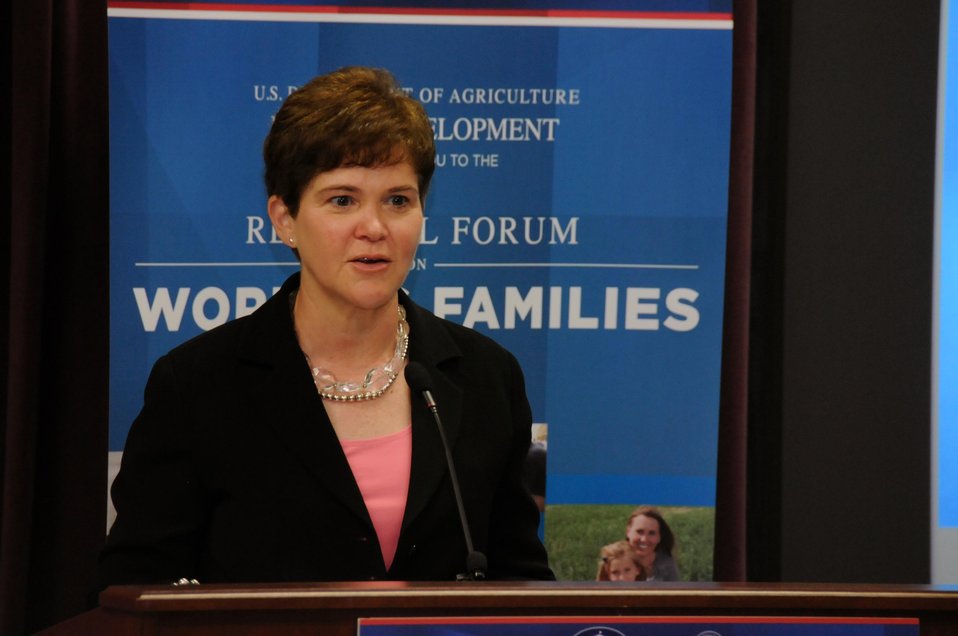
Agriculture Deputy Secretary Krysta Harden speaks at a regional forum of the White House Summit on Working Families in Petersburg, VA Wednesday, Jun. 11, 2014. The forum brings together stakeholders with government and regional leaders to identify initiatives for working families and businesses in rural areas. This forum is part of a series of regionally hosted conversations leading up to the Jun. 23, 2014 White House Summit on Working Families.